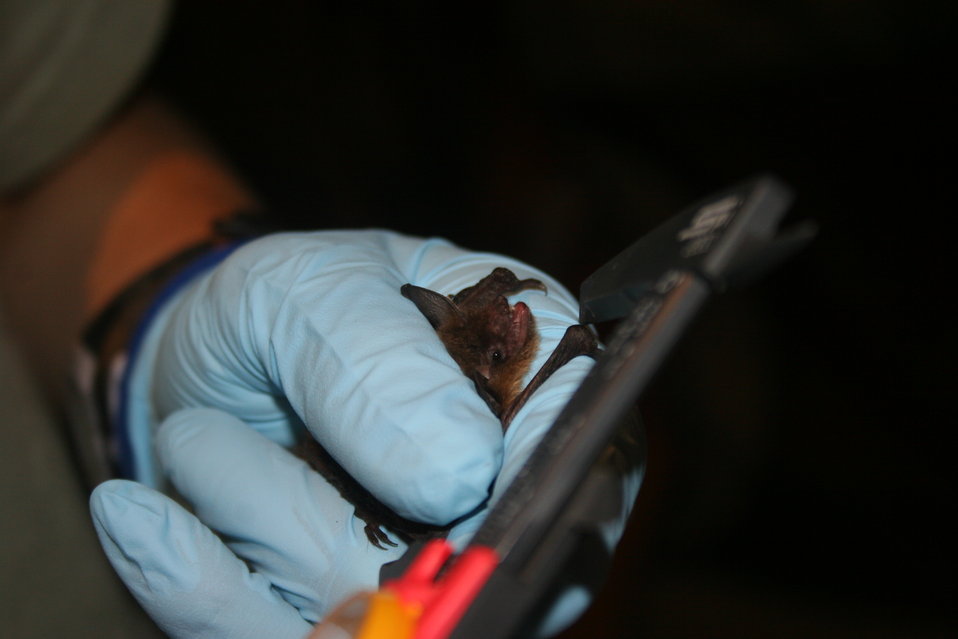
Measuring forearm

Biologist measures forearm of little brown bat.